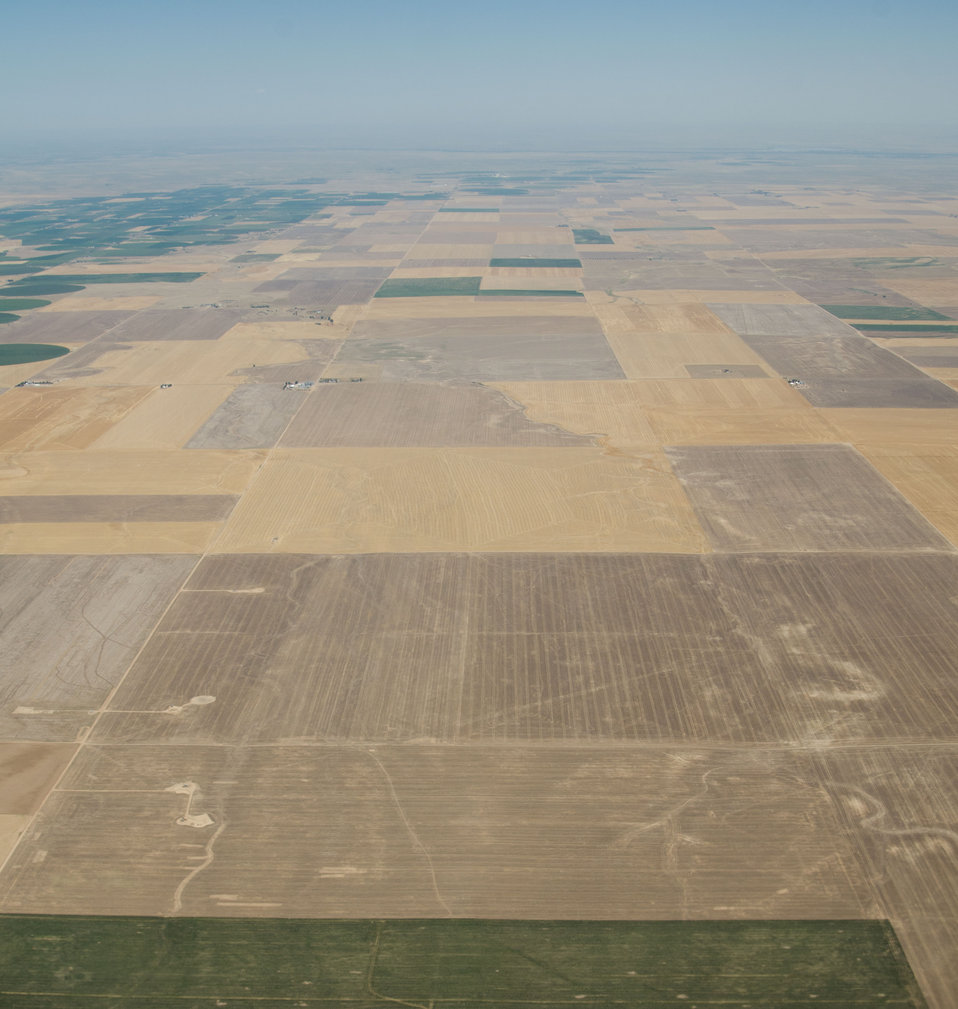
Aerial views of drought affected Colorado farm lands, 80 miles east of Denver, Colorado on Saturday, July 21, 2012.